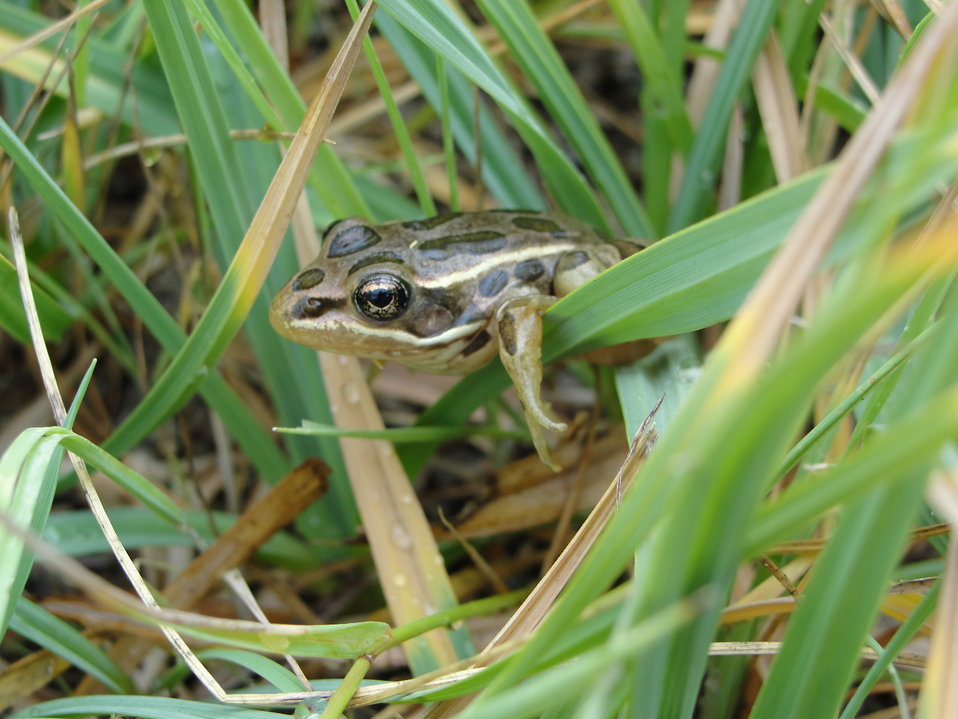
Northern leopard frog (Rana pipiens ) occurring in Spring Valley, Nevada. Date of photo 5-18-2010.